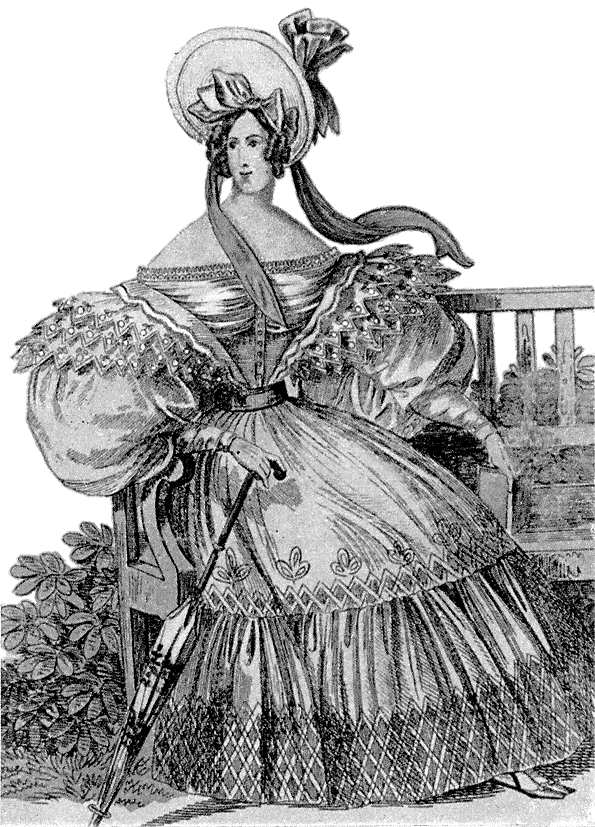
1832-Wiener-Moden-fashion-plate